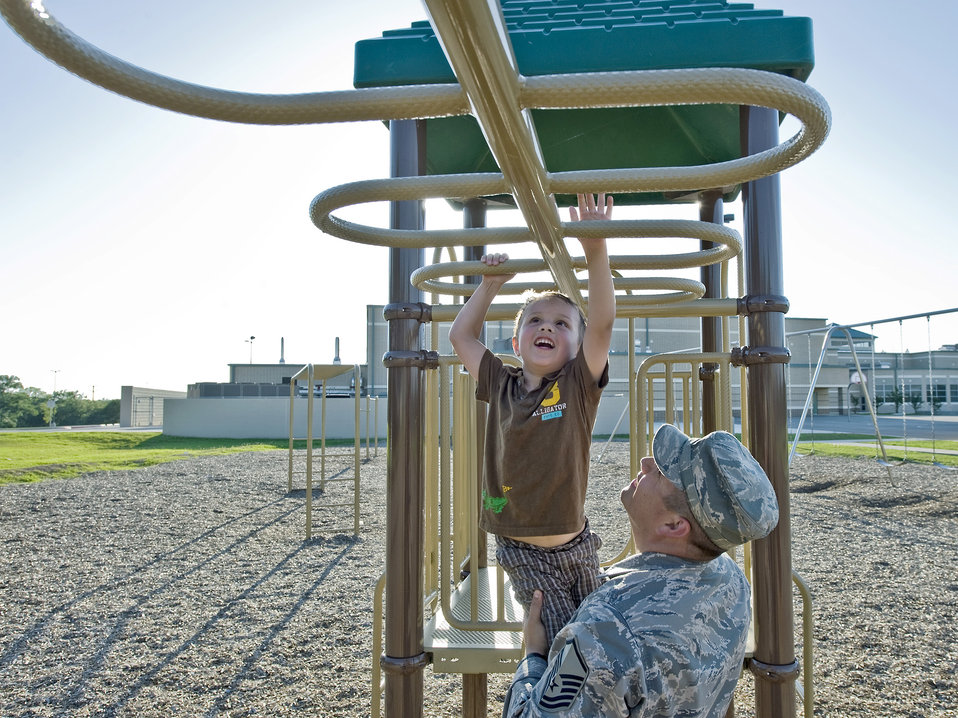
Know before you go

Master Sgt. Rodolfo Gamez helps his son, Tomas, across the monkey bars at their neighborhood park after work.